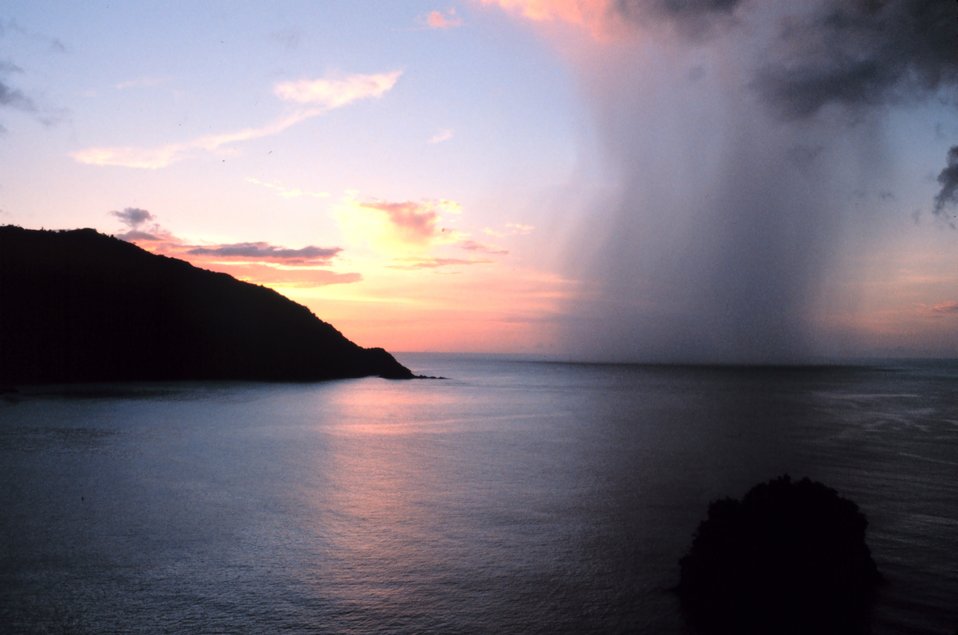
A rain shaft pierces a tropical sunset as seen from Man-of-War Bay.